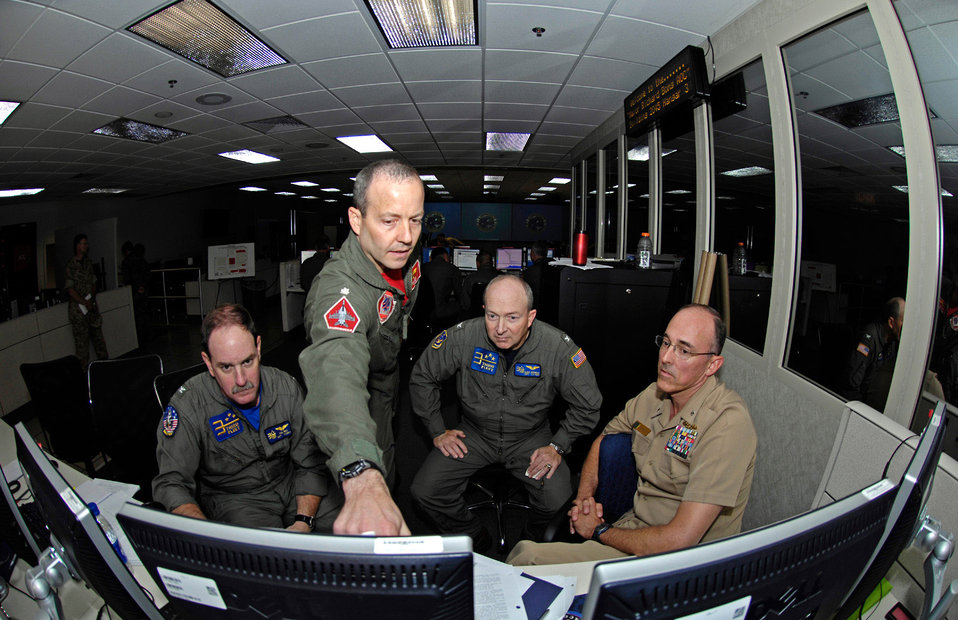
Exercise in Pacific builds trust between nations

Navy Capt. Paul Innis, Navy Cmdr. David Little, Navy Capt. Chris Sprinkle and Navy Cmdr. Doug Anderson discuss a battle strategy in the 613th Air and Space Operations Center July 22 at Hickam Air Force Base, Hawaii. The officers are providing command and control for the airpower in Exercise Rim of the Pacific 2008.